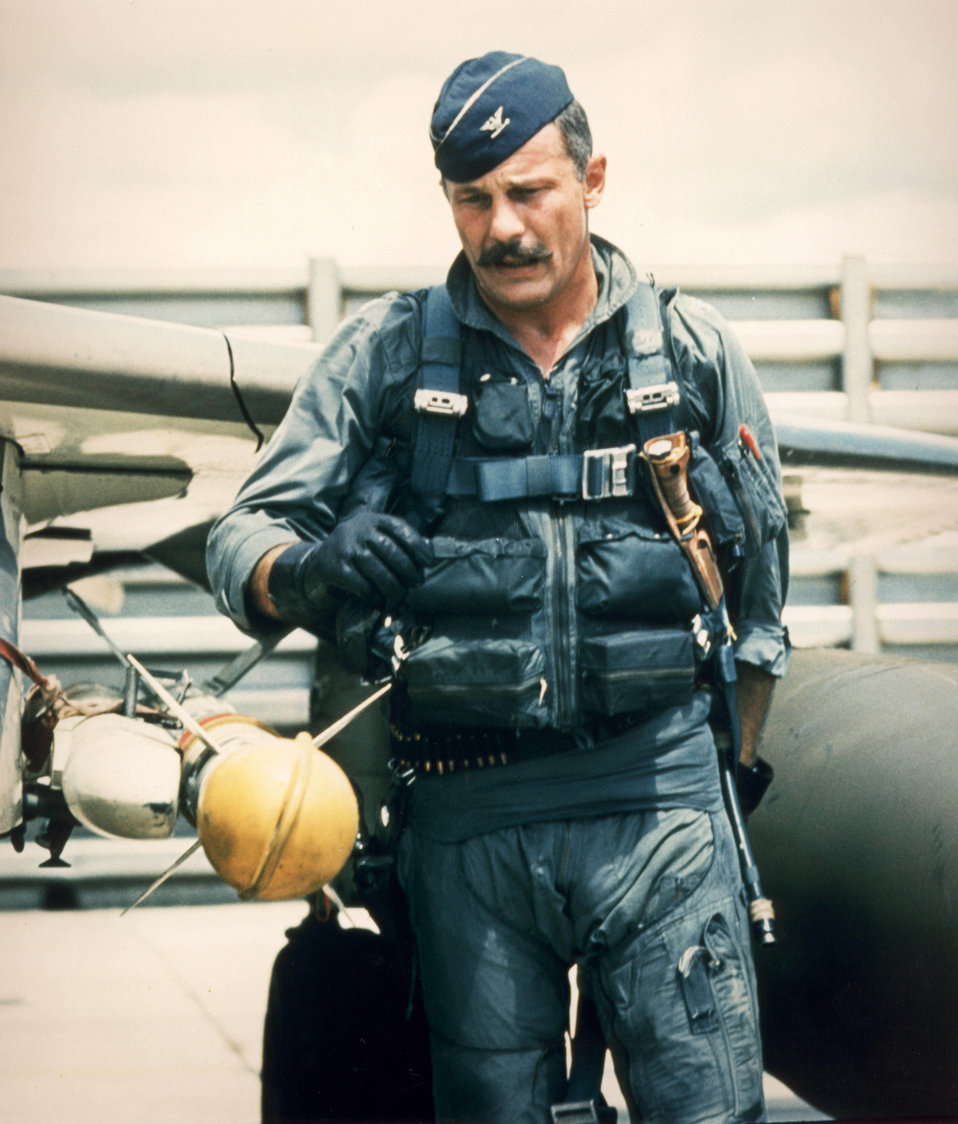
Robin Olds

1960's -- Robin Olds, in Southeast Asia - 1967- commander of the 8th Tactical Fighter Wing, preflights his F-4C Phantom. Col. Olds shot down four enemy MiG aircraft in aerial combat over North Vienam.